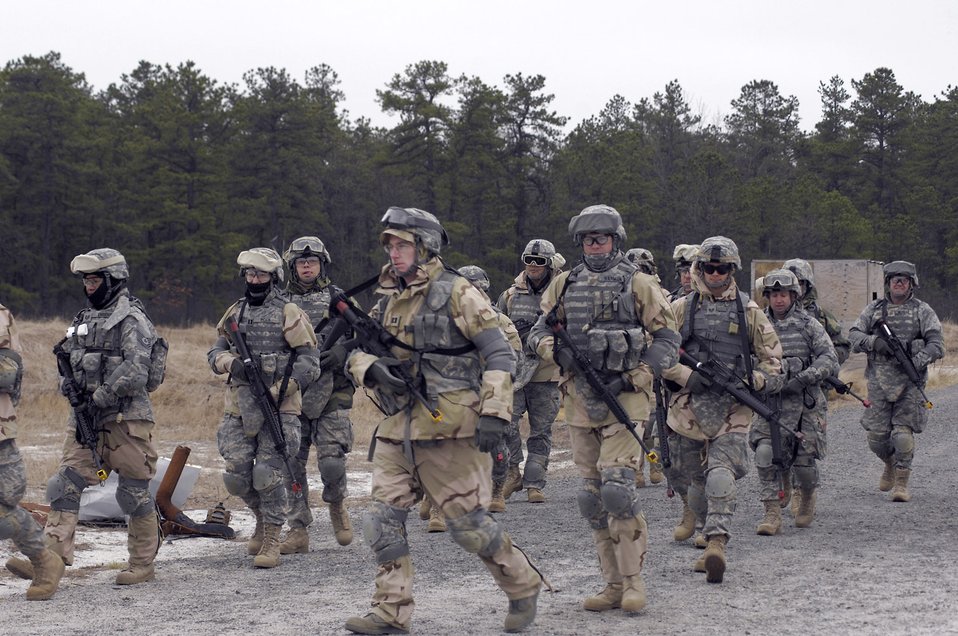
Airmen master Soldier skills training

Airmen march toward a mock village during Individual Movement Technique training at the Fort Dix, N.J., improvised explosive device range. The training teaches troops how to conduct maneuvers in an unknown, often hostile, environment. The Airmen, members of USAF Class 25, are completing the Soldier Skills Training Course as they prepare for various deployments around the globe. There are about 75 Airmen currently going through the month-long course.